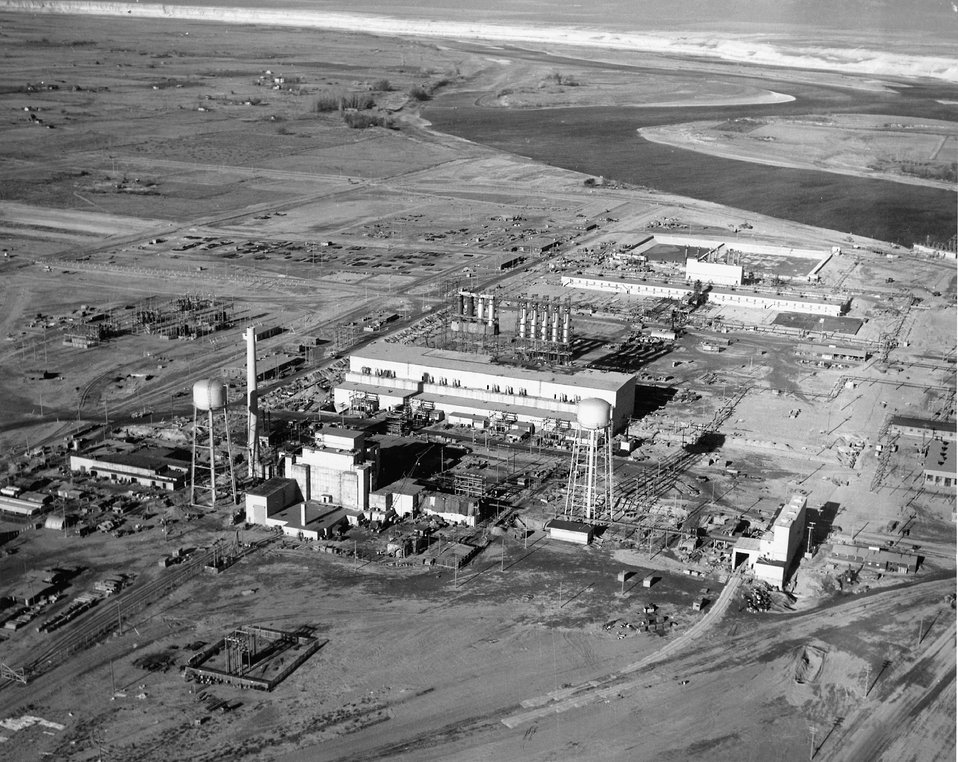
One of the three pile areas at the Hanford Engineer Works. This is the manufacturing areas where plutonium is made. c. undated